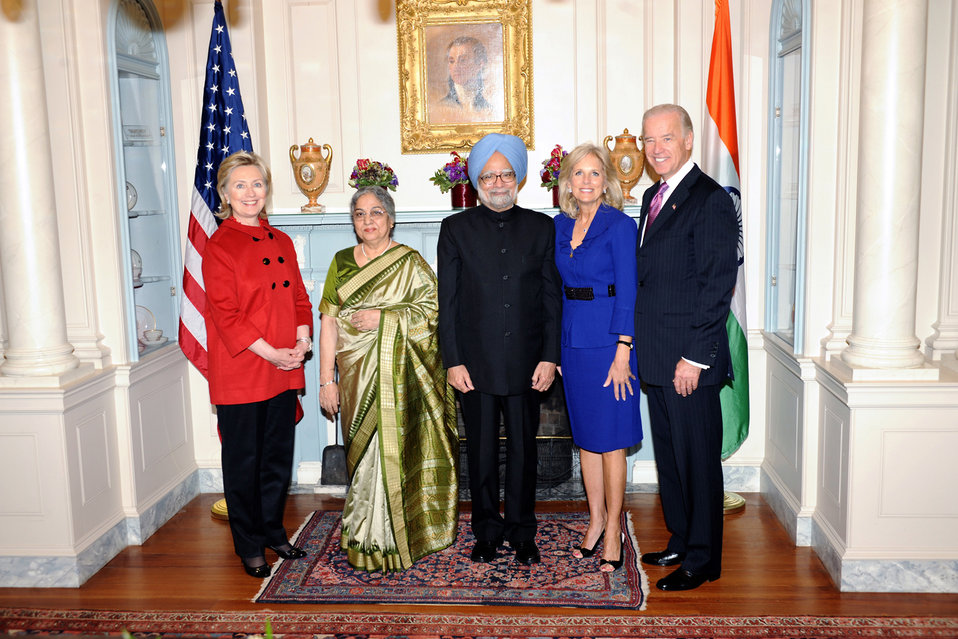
Vice-President Biden, Secretary Clinton Co-Host Social Lunch in Honor of Indian Prime Minister

U.S. Vice-President Joe Biden Dr. Jill Biden co-host a social lunch with U.S. Secretary of State Hillary Rodham Clinton in honor of Indian Prime Minister H.E. Dr. Manmohan Singh and Dr. Gurusharan Kaur at the U.S. Department of State in Washington, DC November 24, 2009.